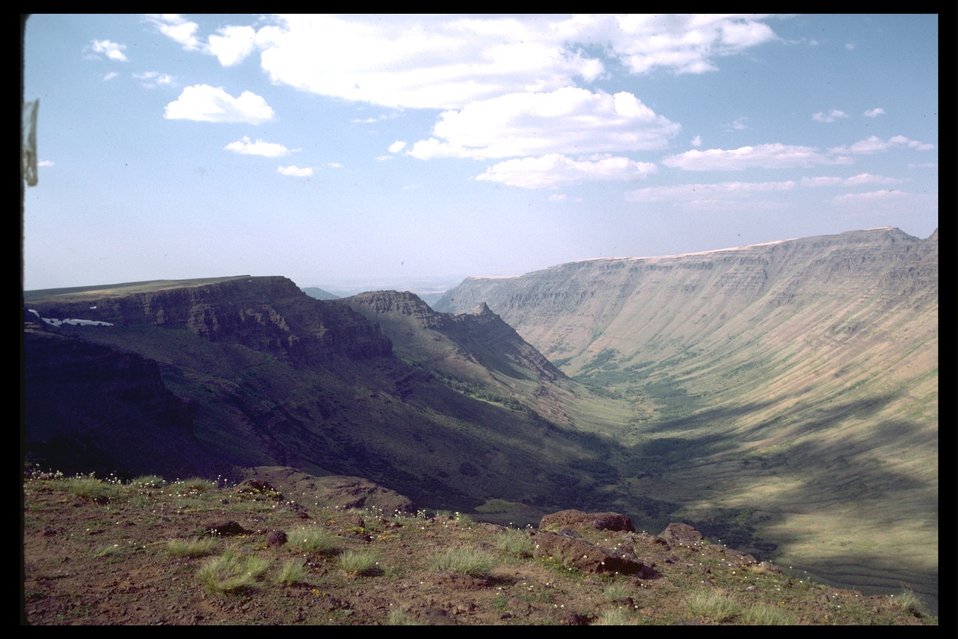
High Steens, Kiger Gorge from view point. (WSA 2-85F)